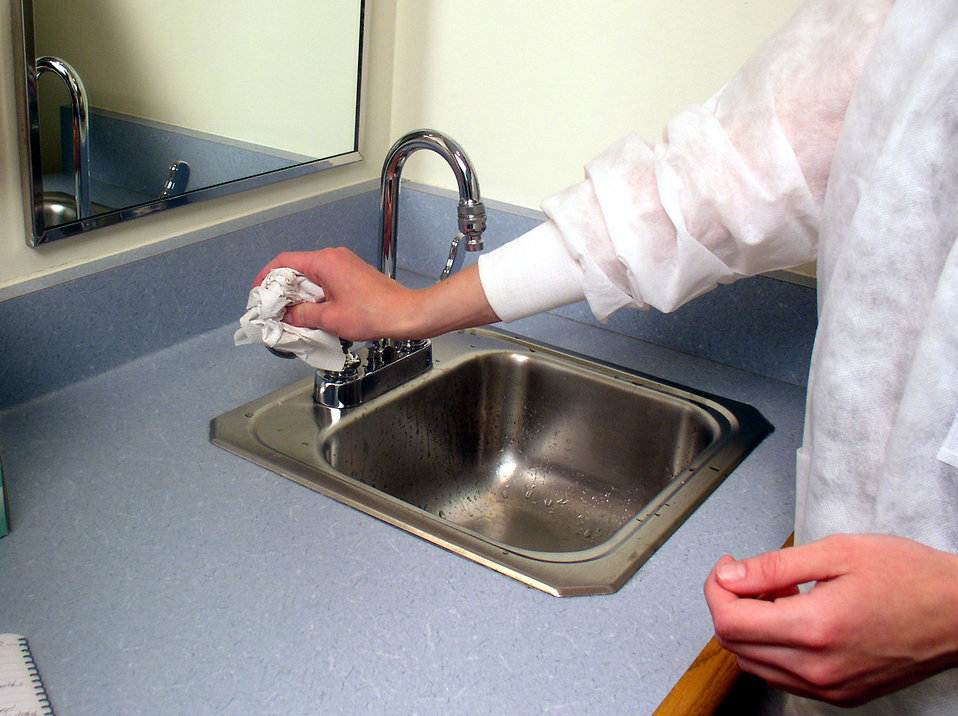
(Image 11 - Hand Washing Procedure) This laboratorian is shown turning the faucet off with a disposable hand towel.